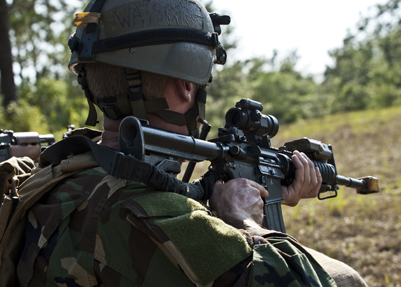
Training

Tech. Sgt. Joseph Watson guards his post during a combat aviation advisor course exercise May 24, 2011, at Duke Field, Fla. As part of the exercise, 19 CAA students deployed to a foreign nation to advise and train their air forces in fixed-wing and rotary aircraft operations. The four-day exercise is the capstone of 12 weeks of baseline certification training for CAA. The yearlong process to become a CAA also includes months of language and flight training.